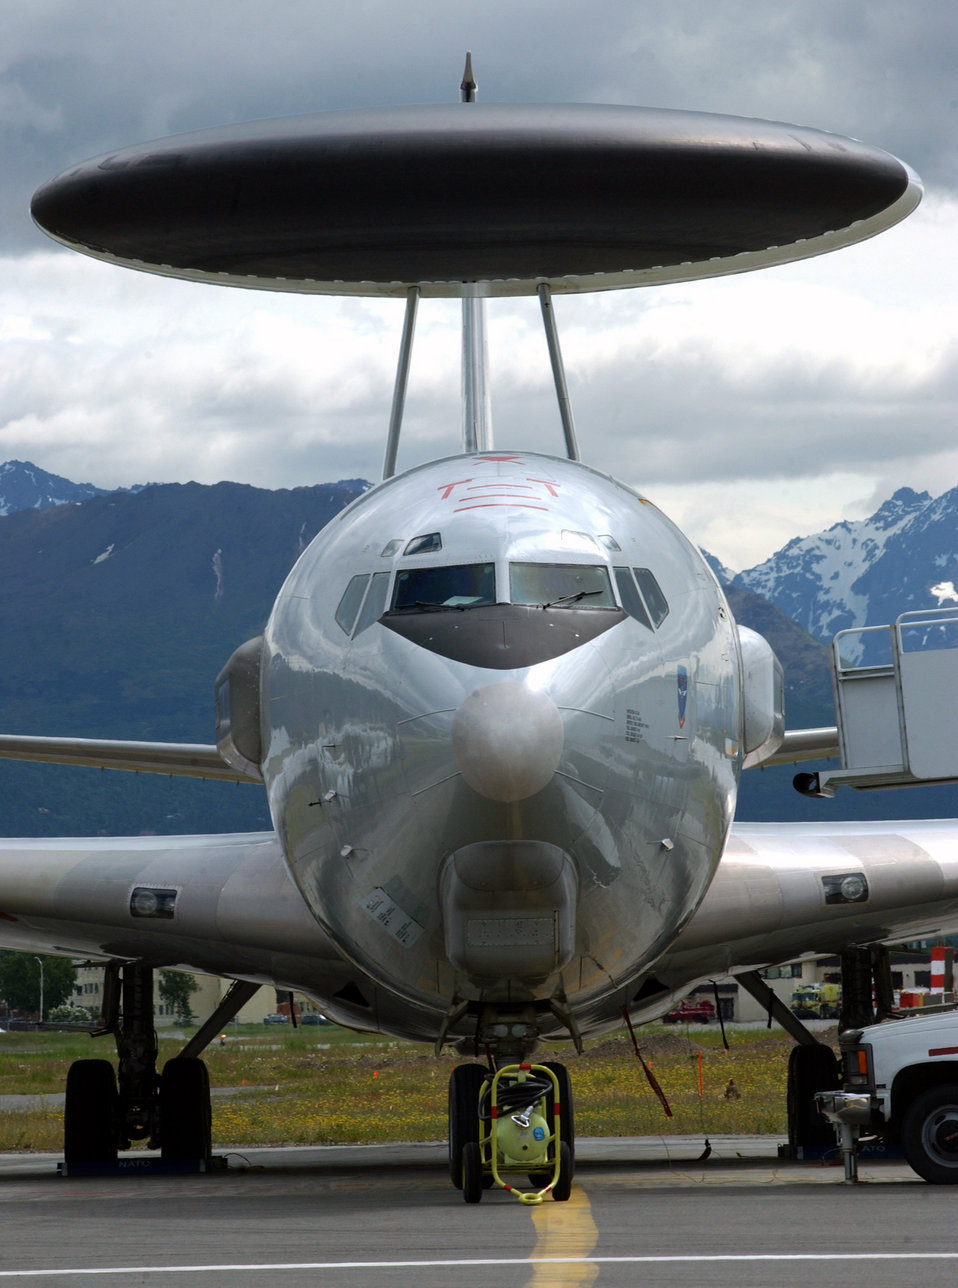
Eye in the sky

ELMENDORF AIR FORCE BASE, Alaska -- An E-3A Airborne Warning and Control System from NATO's Geilenkirchen Air Base, Germany, prepares for takeoff. The AWACS is here providing critical information to pilots and air operations center controllers during Cooperative Cope Thunder, a simulated combat airpower employment exercise, which ends June 20.